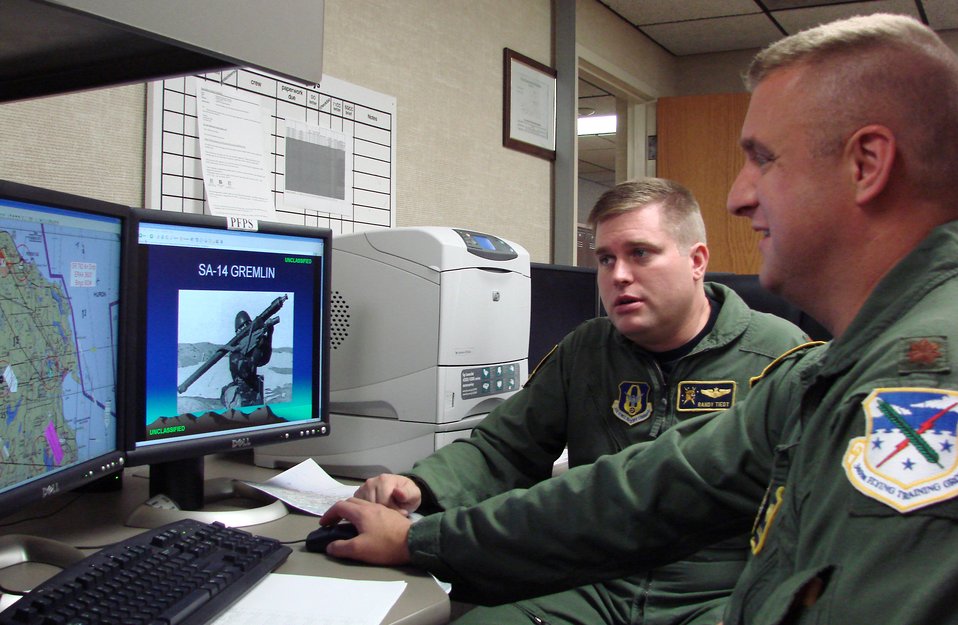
Reservists add major adjustment to T-1 training

Majors Randy Tiedt and Doug Stouffer update a simulated threat on the Portable Flight Planning Software they customized to incorporate simulated threats into the mission planning of T-1 students pilots Dec. 15 at Vance Air Force Base, Okla. The new process provides the students with an early exposure to the reality of combat. The two T-1 Jayhawks pilots are assigned to the 5th Flying Training Squadron.